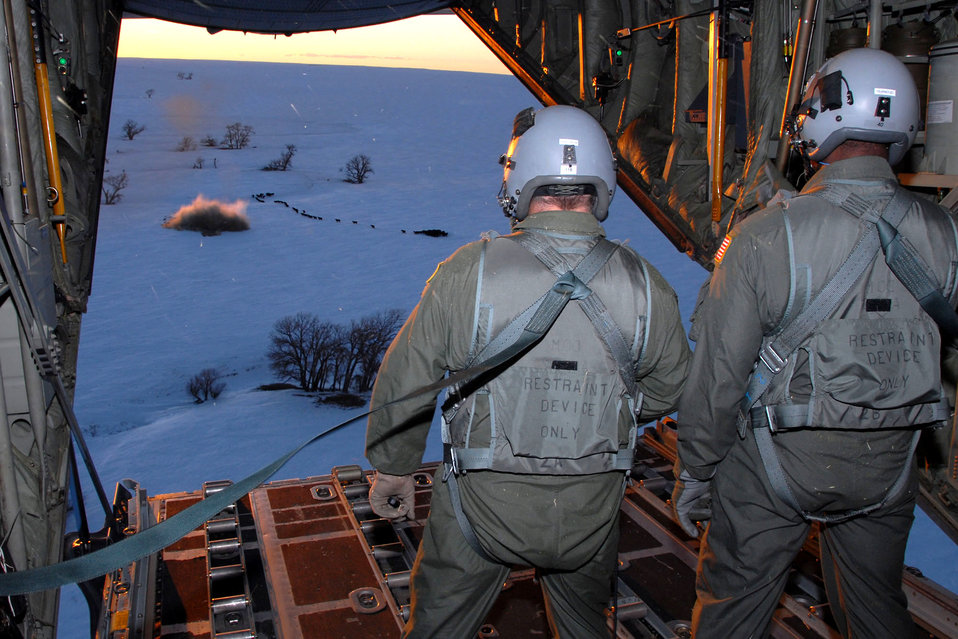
National Guard to the rescue in 8 states

Loadmasters of the Wyoming Air National Guard watch a one-ton hay bale land near a herd of cows during an emergency feeding mission Jan. 3 caused by a snowstorm that hit the area in southeastern Colorado.